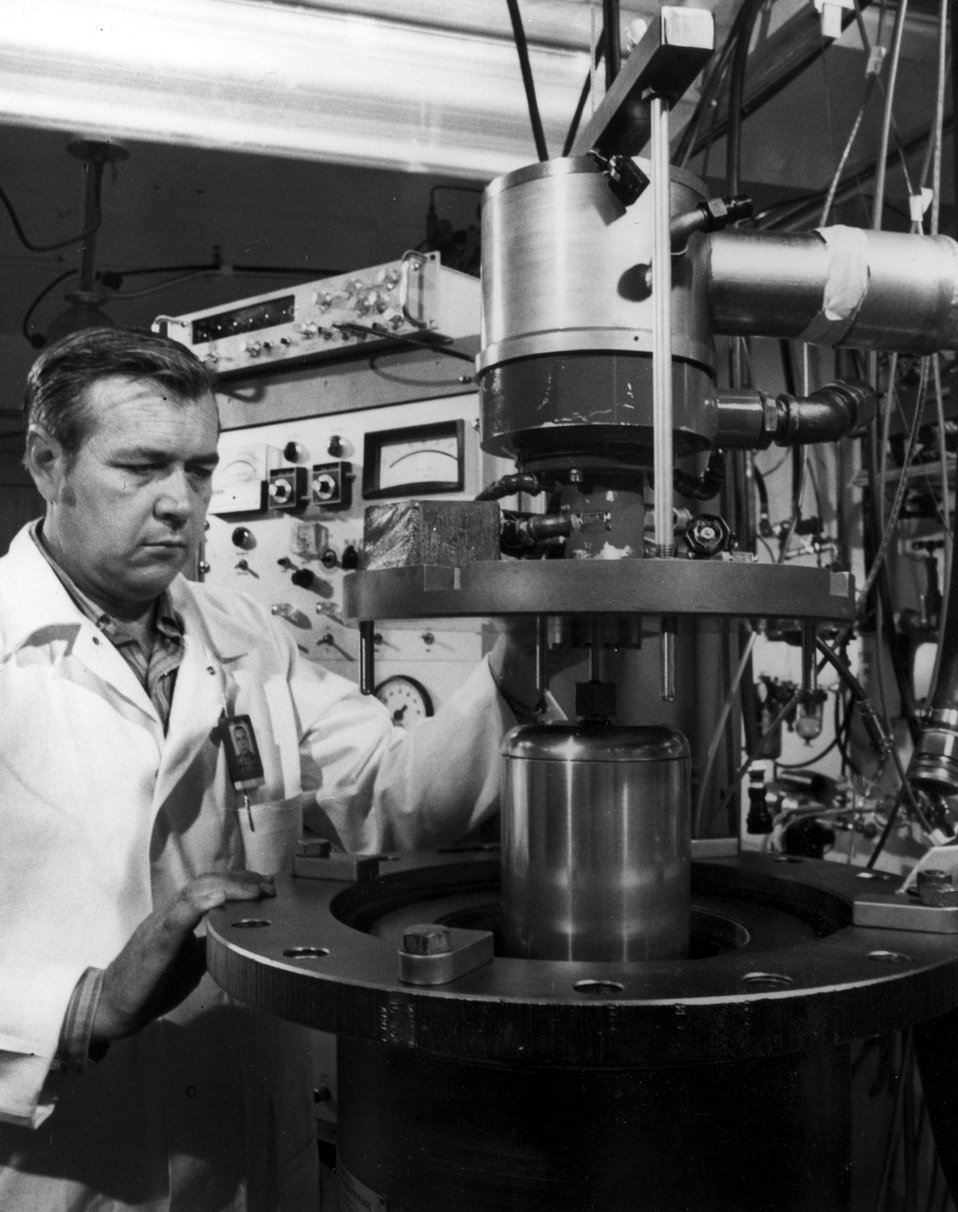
LIQUID ZONAL CENTRIFUGES...High speed, liquid zonal centrifuges developed at the U.S. Atomic Energy Commission's Oak Ridge (Tennessee) National Laboratory are now being manufactured commercially for ultra-high purity biological separations. c. 1972